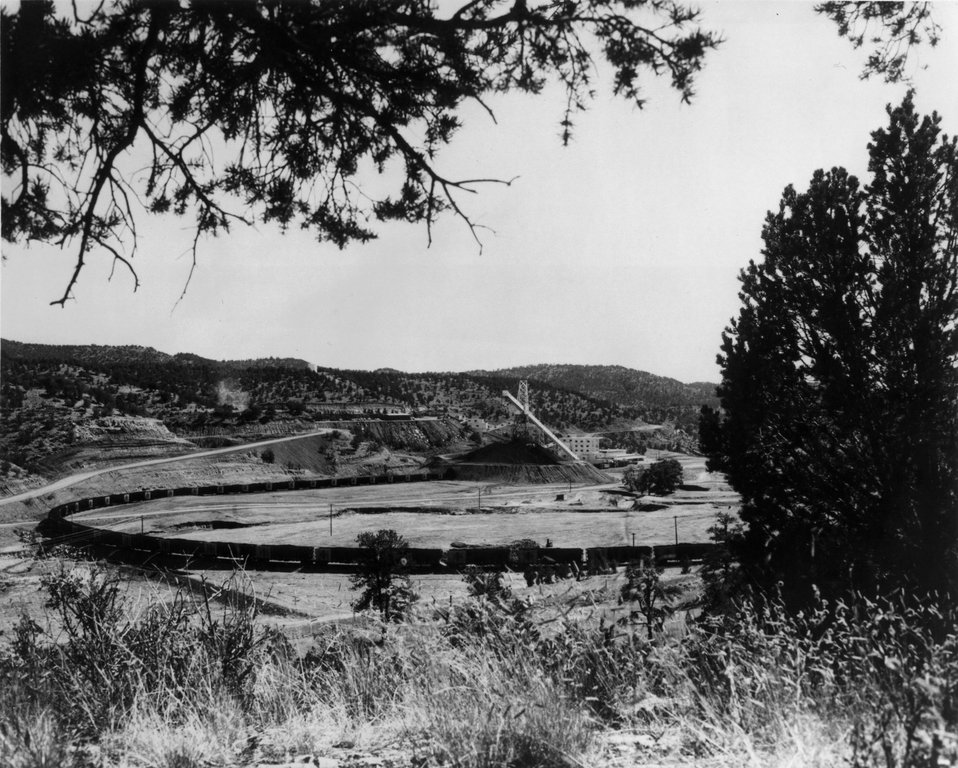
Unit train loaded with coking coal at Kaiser Steel Corporation's York Canyon mine in New Mexico.
c.1972